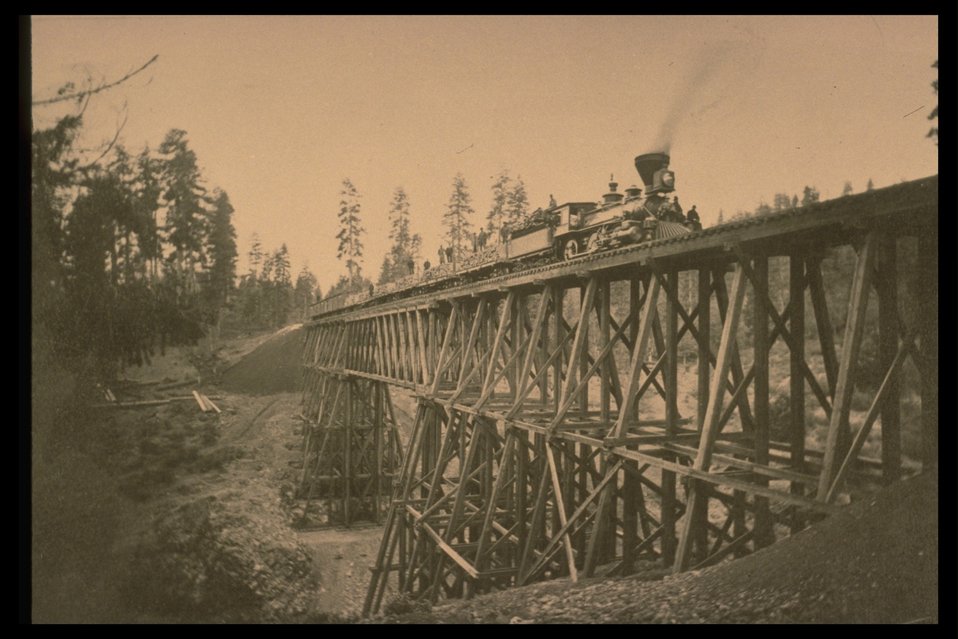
Black and White photo of old logging train on wooden tressel.